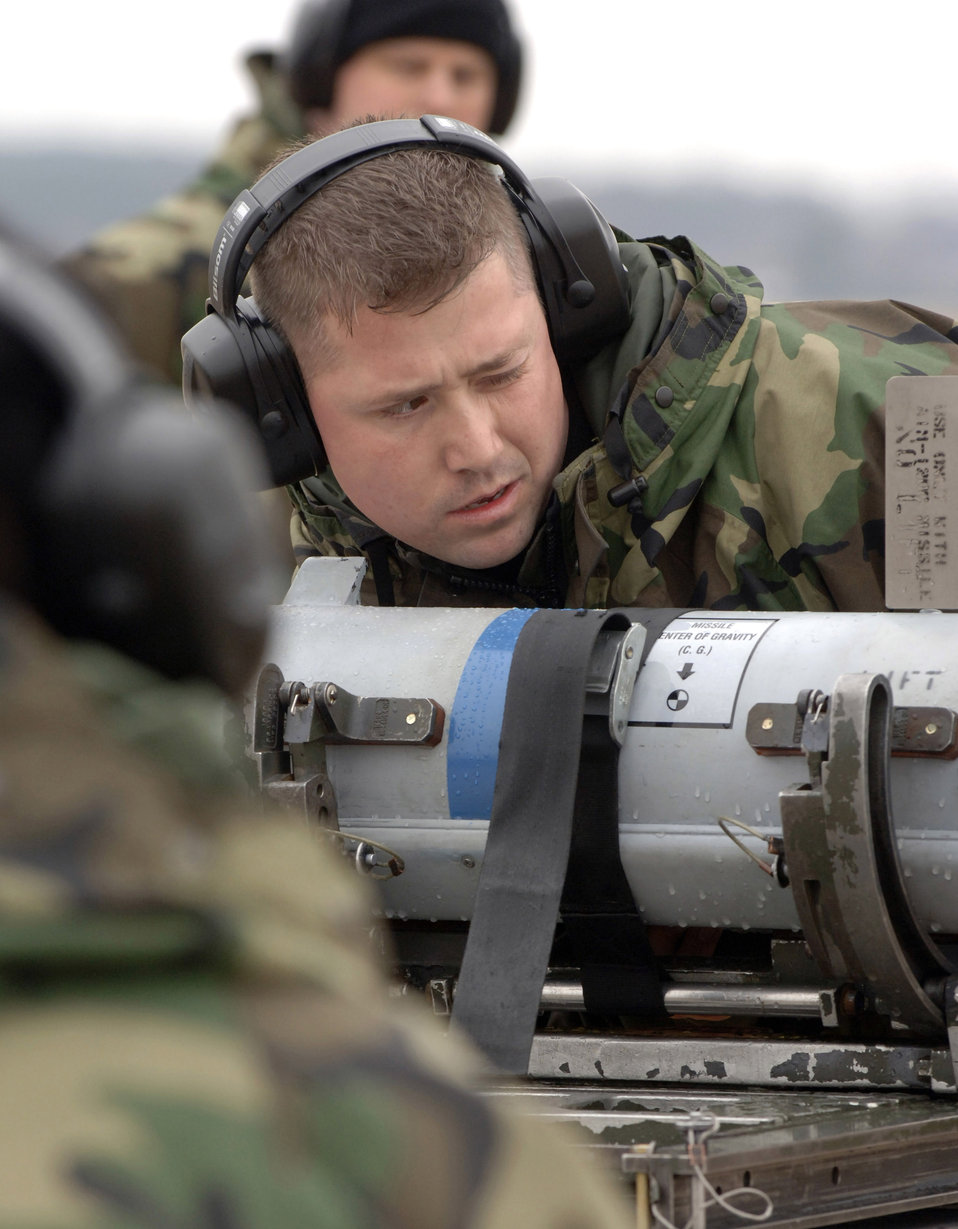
Loading up for competition

Staff Sgt. Kevin Pendleton examines ammunition before loading it onto an F-15 Eagle Jan. 18 during the Load Competition of the Year at Langley Air Force Base, Va. The competition evaluates technical proficiency, safety procedures and overall time. Sergeant Pendleton is part of a three-member team from the 71st Fighter Squadron.